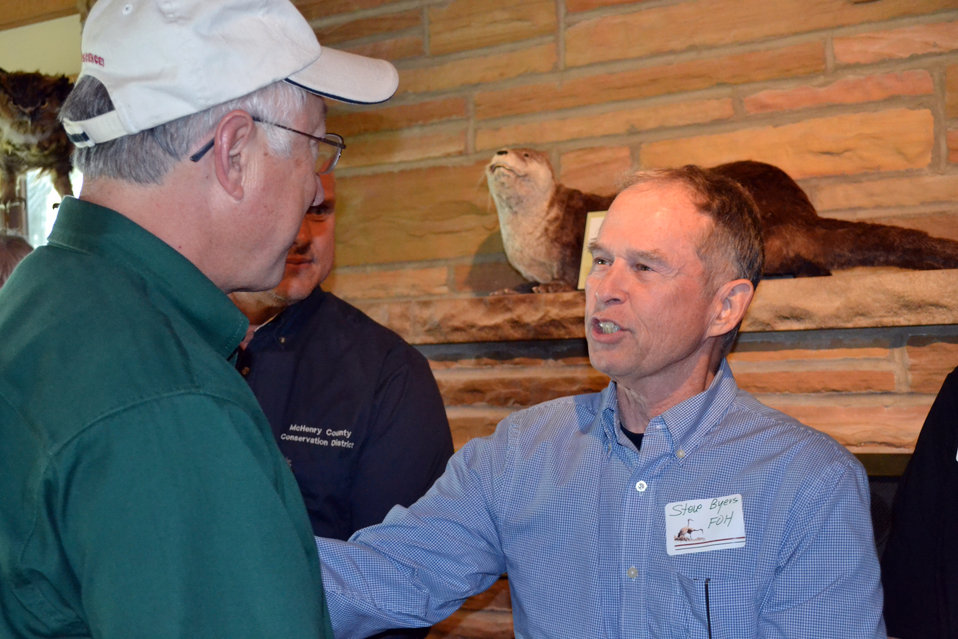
Meeting the Friends

Secretary of the Interior Ken Salazar met with members of the Friends of Hackmatack and thanked them for their vision and support.